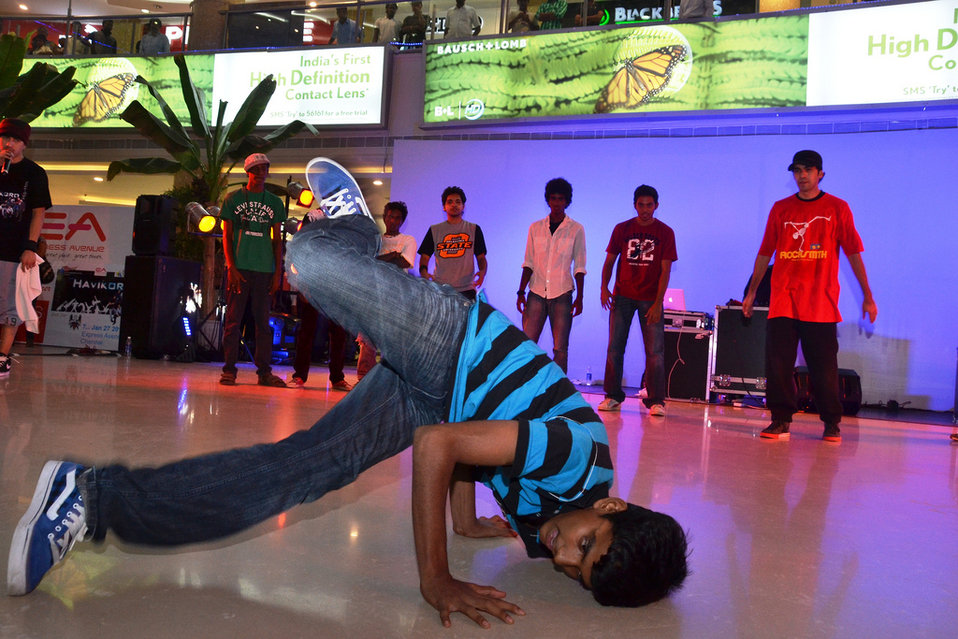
HaviKoro Performs for Fans

HaviKoro, an American breakdancing group, performs for fans in Chandigarh, India, on January 19, celebrating the sixth anniversary of the American Corner in Chandigarh.